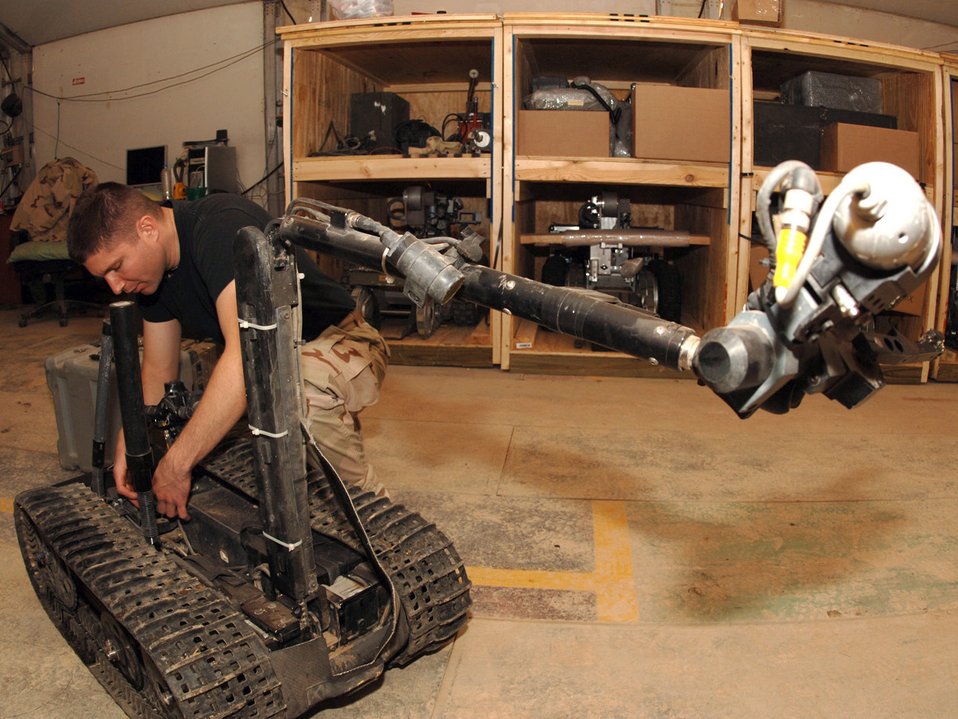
EOD robots

BALAD AIR BASE, Iraq (AFPN) -- Staff Sgt. Glenn Wright repairs an explosive ordinance disposal robot used to scope the area before going out to a site. Sergeant Wright is with the 332nd Expeditionary Civil Engineer Squadron.